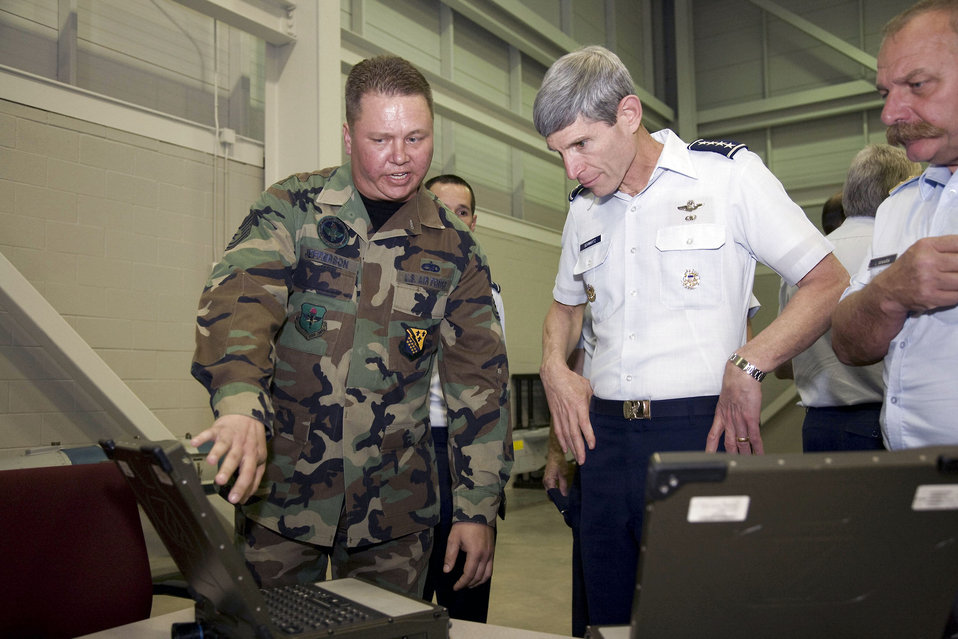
NATO air chiefs discuss common challenges, solutions

Tech. Sgt. John Jefferson briefs Gen. Norton A. Schwartz on the integrated maintenance information system applications and how the applications are used on the F-22 Raptor Oct. 9. Sergeant Jefferson is a F-22 crew chief instructor supervisor, and General Schwartz is the Air Force chief of staff.